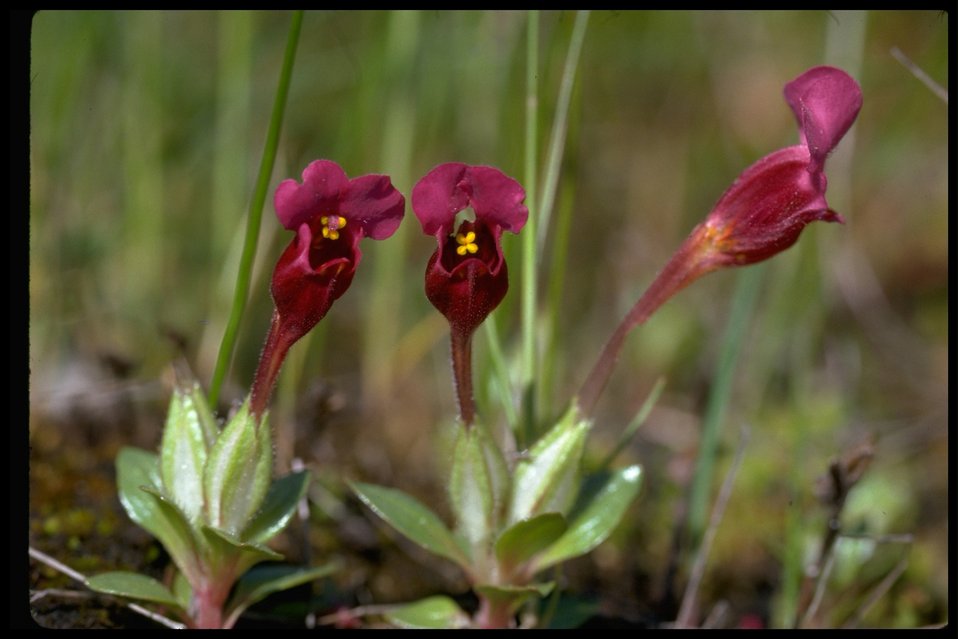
Mimulus douglasii, or commonly known as Douglas' Monkey Flower.